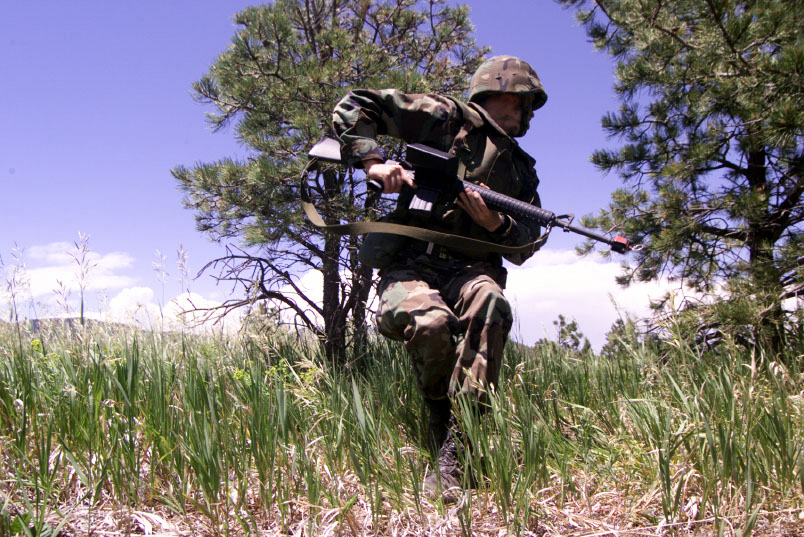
Pull back

U.S. AIR FORCE ACADEMY, Colo. -- A cadet pulls back under fire and dashes for cover during a graduated fighting withdrawal here at the Global Engagement cadet exercise.